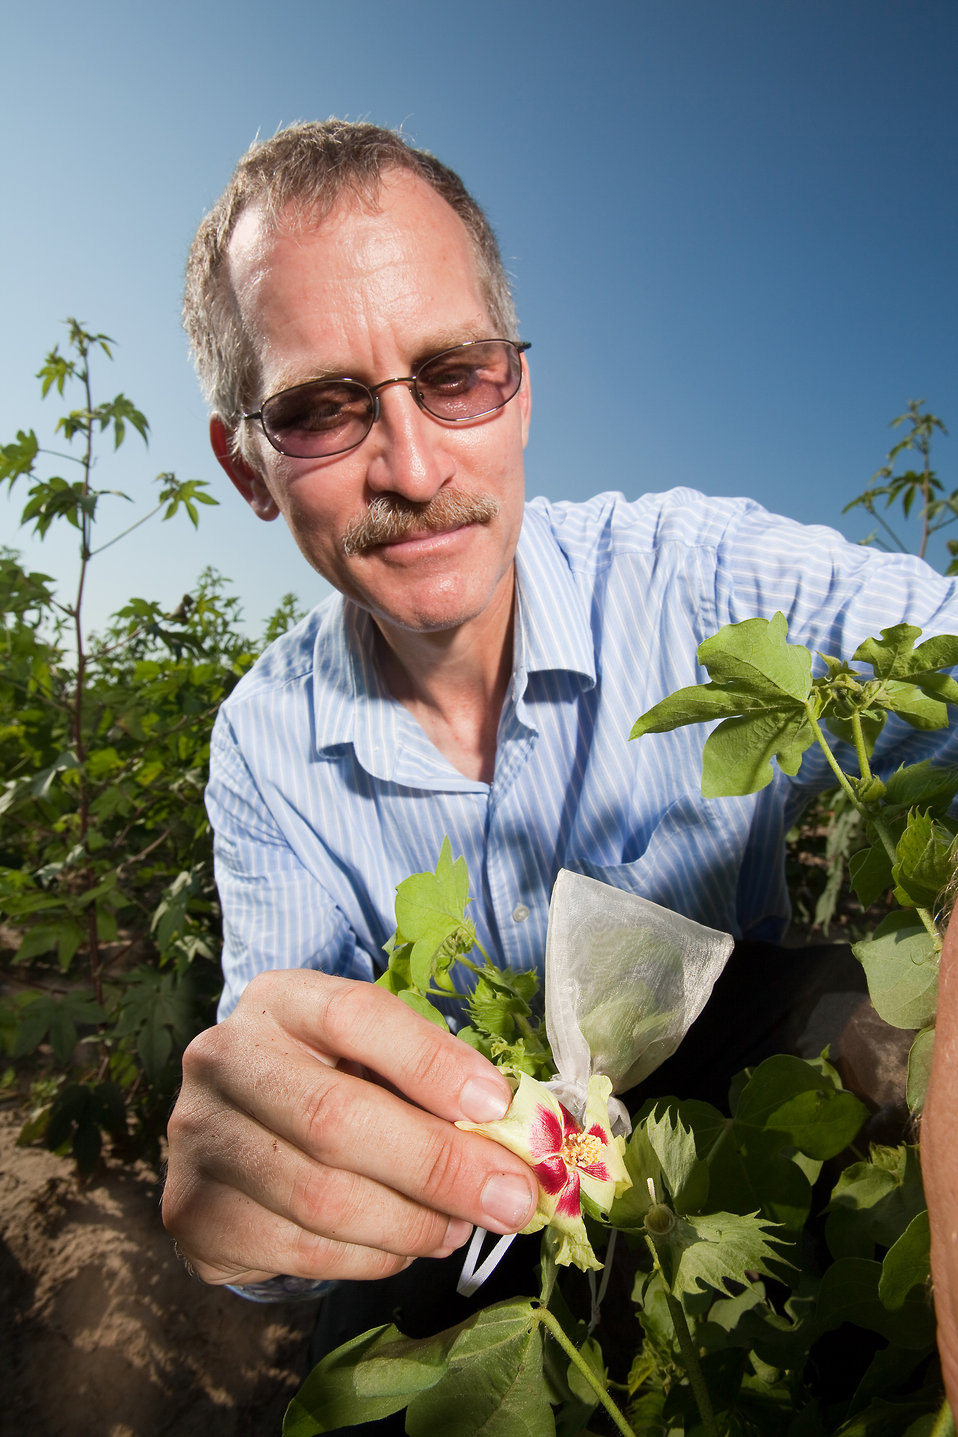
U.S. Department of Agriculture (USDA) Agricultural Research Service (ARS) geneticist John Erpelding cross-pollinates Gossypium cotton flowers to develop new populations on July 19, 2011.